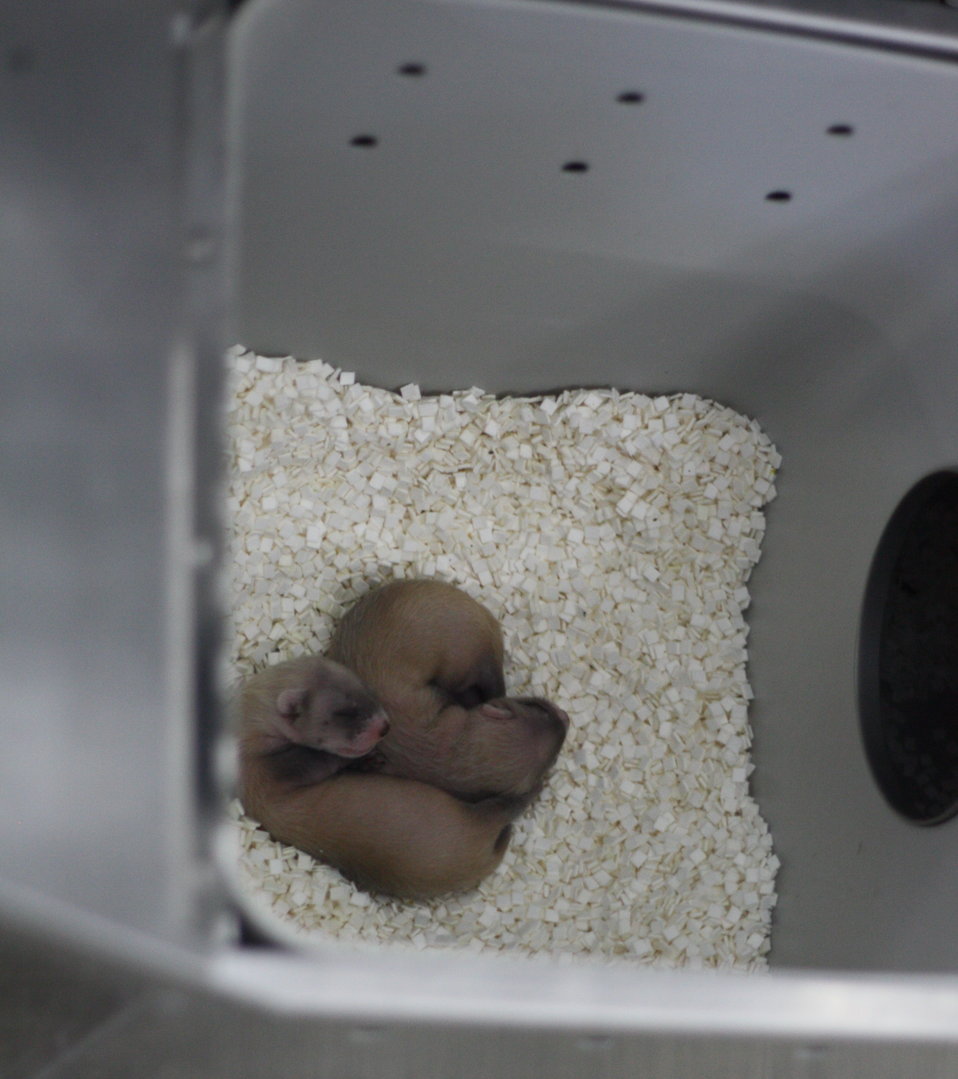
Interns visit the NBFFCC

In the summer of 2012, USFWS Region 6 interns visited the National Black-footed Ferret Conservation Center (NBFFCC) in Colorado to learn how the program reintroduces the endangered Black-footed ferret back into its native habitat.